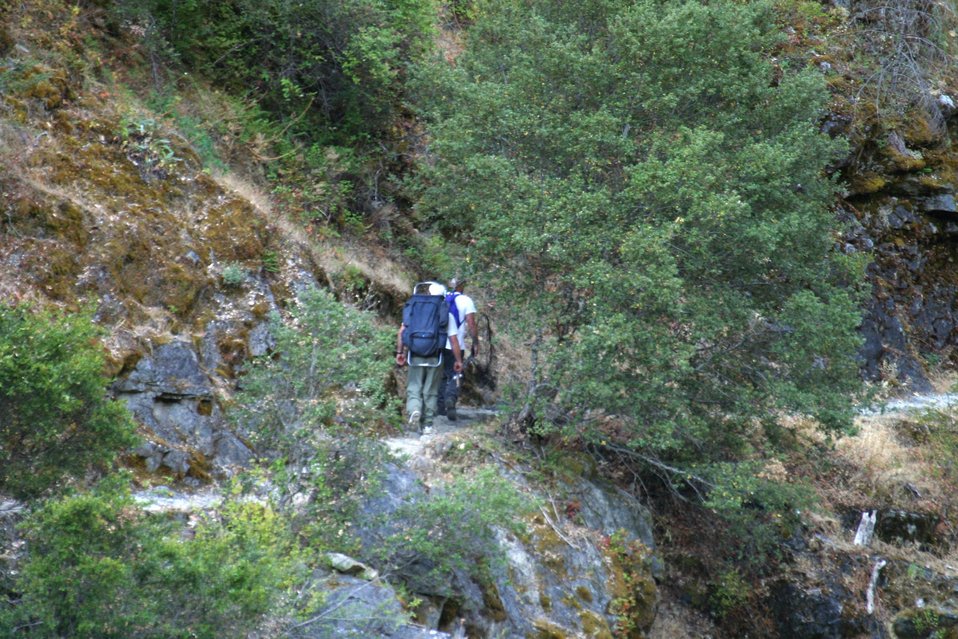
Hiking Rainie Trail between Grave Creek and Rainie Falls.